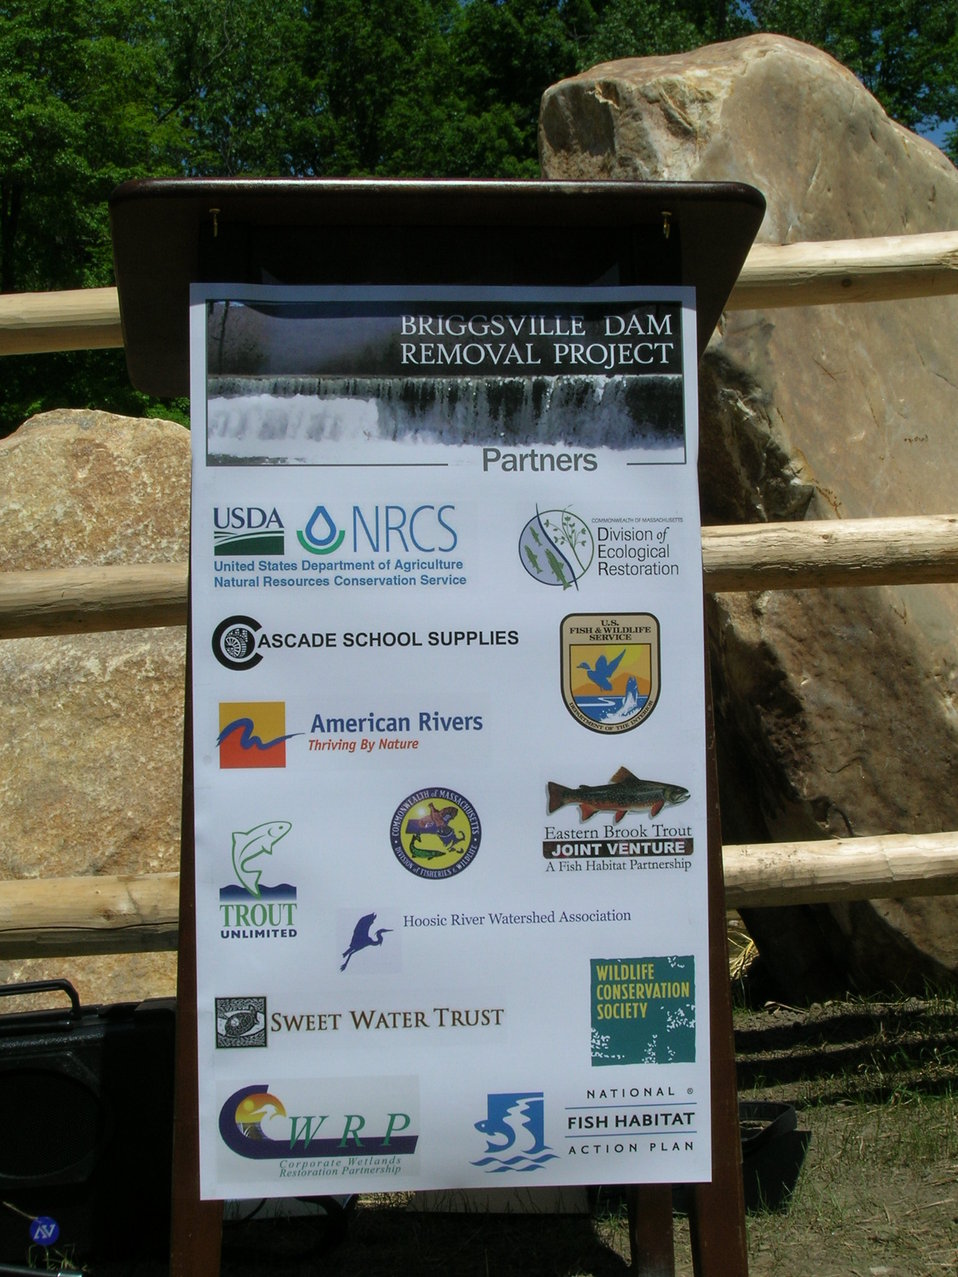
Briggsville Dam Removal Celebration